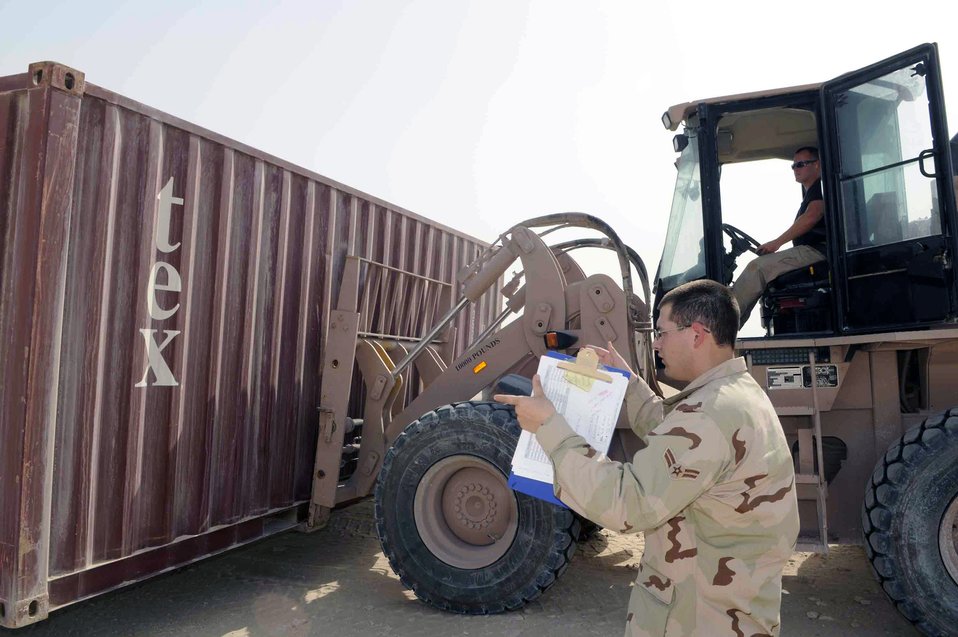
Logistics Readiness Squadron

Airman 1st Class Joseph Trevino and Staff Sgt. Maurice Johnson, guides Chad Swift, DYNA Corporation, while he prepares to load the 3,000-pound container onto a flat bed truck at a Southwest Asia air base April 24. The 379th LRS has removed more than 500 storage containers in less than 60 days. Airman Trevino and Sergeant Johnson are assigned to 379th Expeditionary Logistics Readiness Squadron.